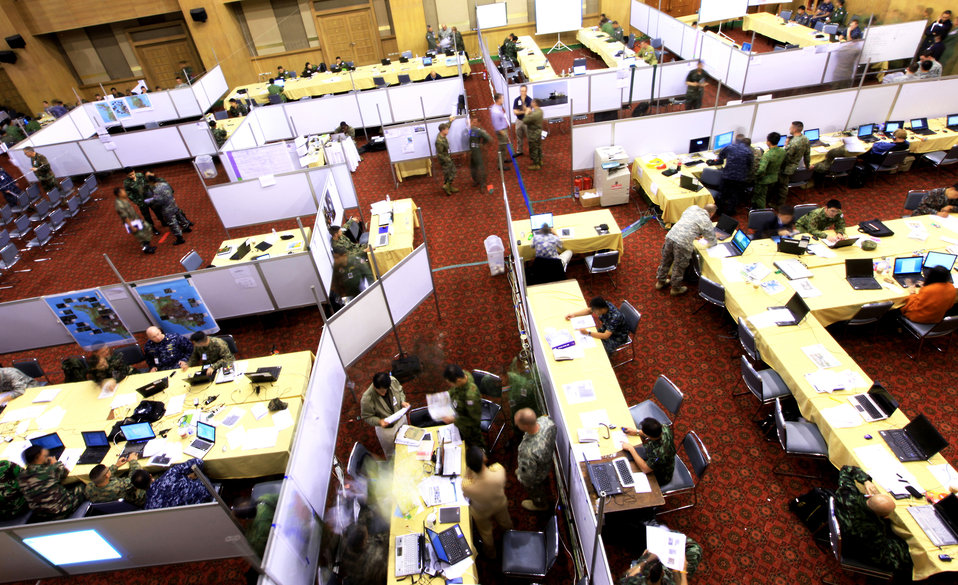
Multinational officials plan for Cobra Gold 2012

Participants in the staff exercise portion of Cobra Gold 2011 plan a future operational exercise Feb. 11, 2011, Chiang Mai, Thailand. The plan they develop over the next two weeks will be used during Cobra Gold 2012.